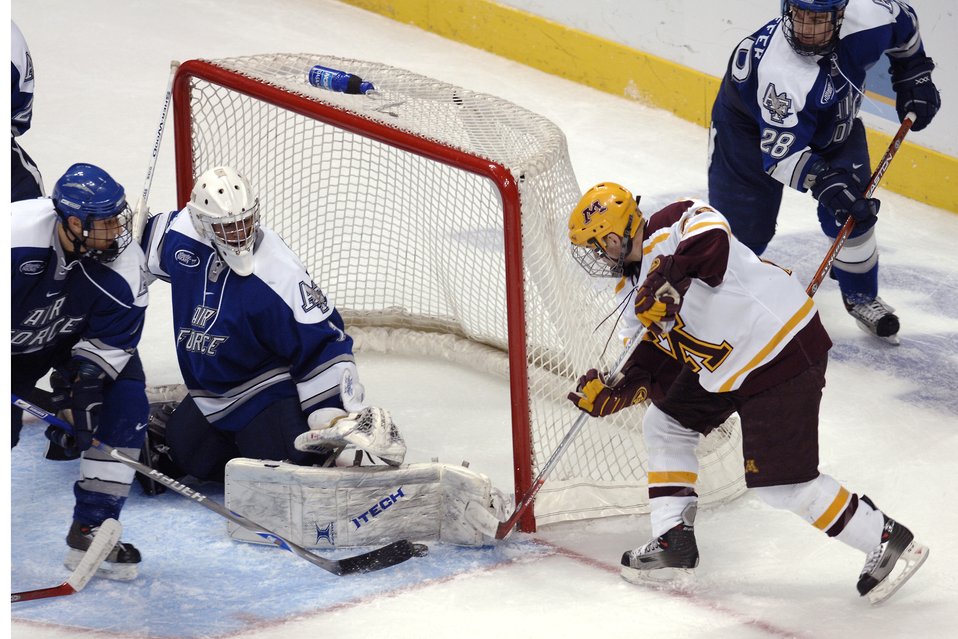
Gophers ground Falcons season during third period rally

Falcon goalie Andrew Volkening makes a left pad save on a Minnesota forward during the NCAA West Regional March 24 at the Pepsj Center in Denver. The freshman net minder made 33 saves in his tournament debut.